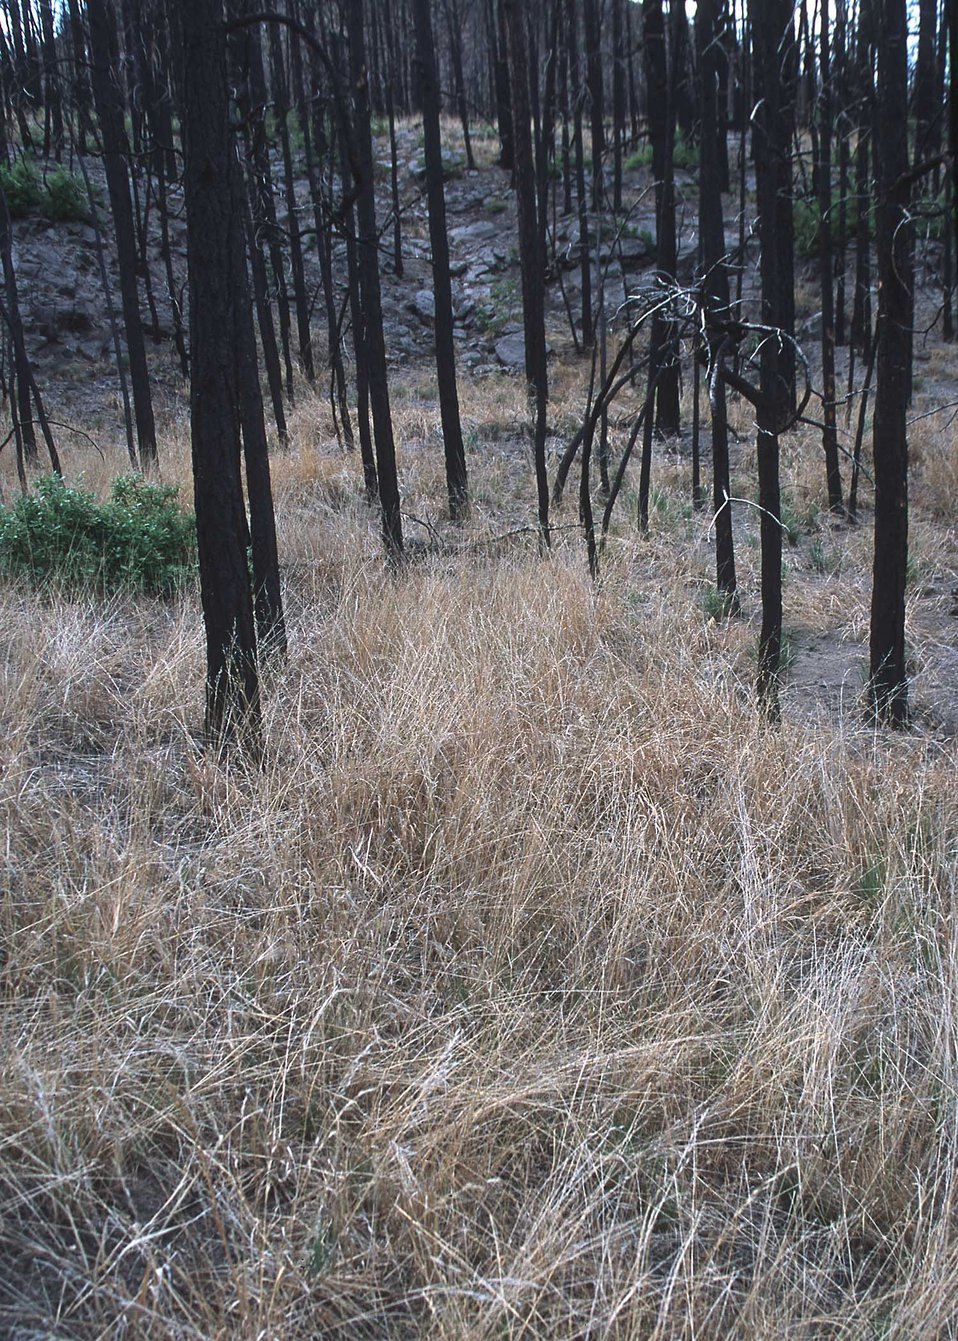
First years growth of emergency reseeding after the Los Alamos fires. Some of the species planted for erosion control and habitat improvement were prairie junegrass, slender wheatgrass, mountain brome, three awn, gambel's oak, and mountain mahogany.